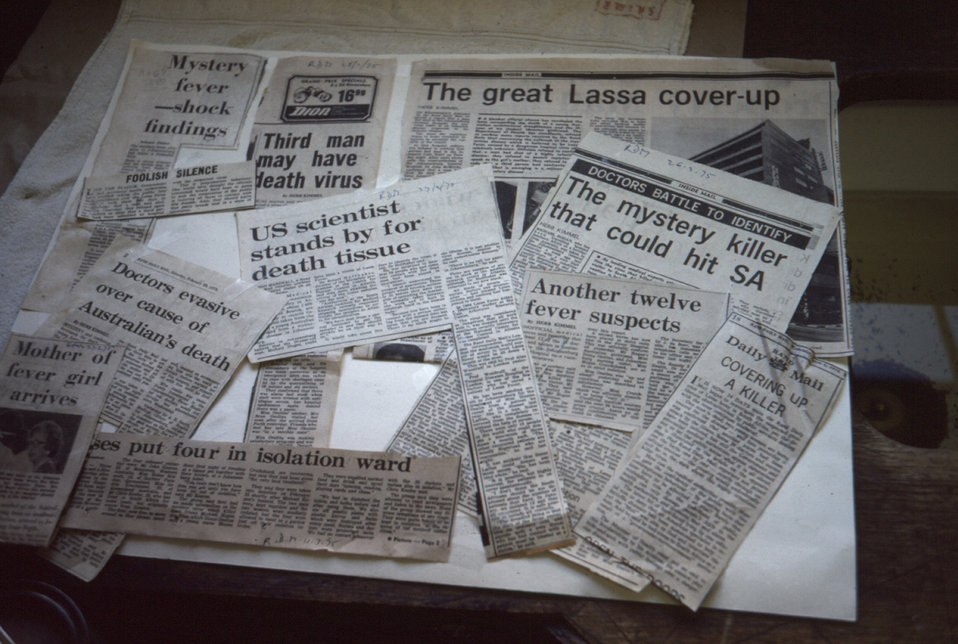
This photograph showed some of the articles that were published during the 1975 Marburg outbreak in southern Africa.